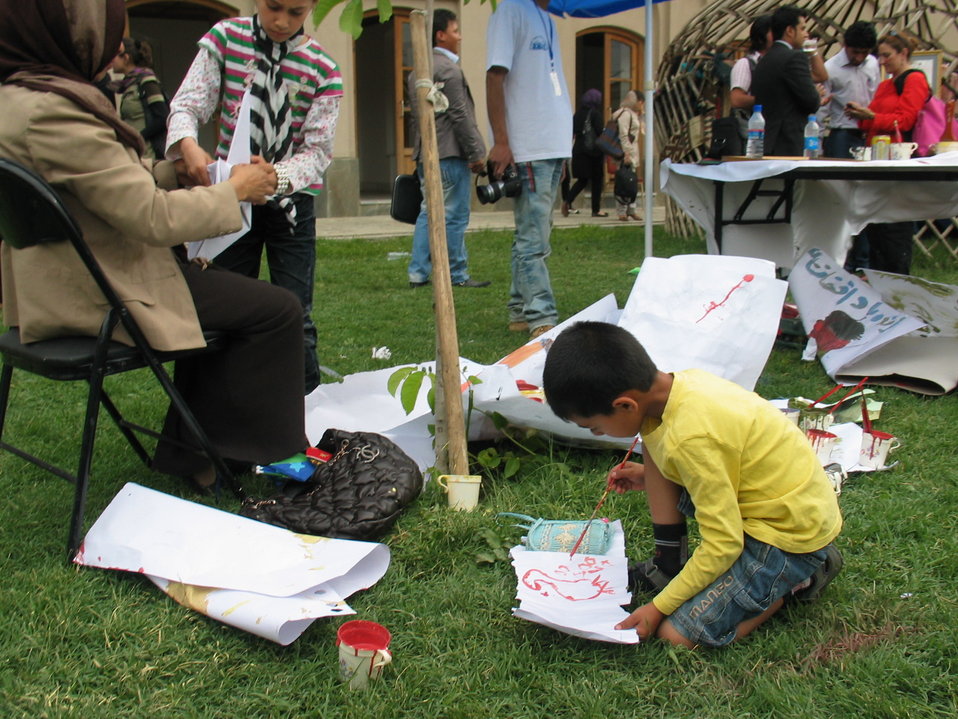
Afghan Youth Voices 016